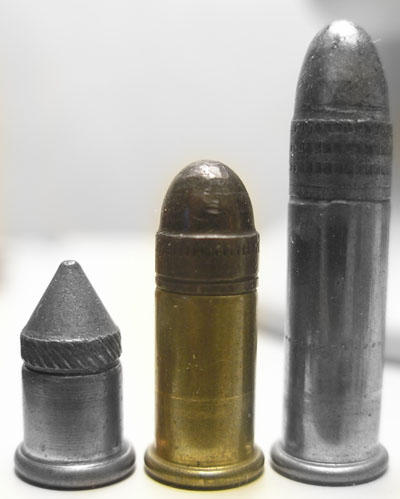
Three bullets (A .22 CB cap, .22 CB short, and .22 Long Rifle)